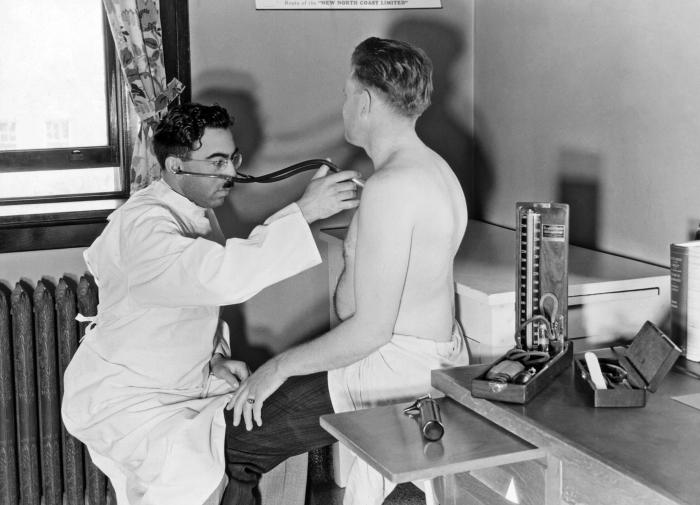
This historic 1932 photograph showed a physician conducting a medical examination of a dairy worker at the state tuberculosis sanatorium in Ah-Gwah-Ching, Minnesota. Ensuring worker health was an important step in keeping the food supply safe, both for the patients, as well as the staff.